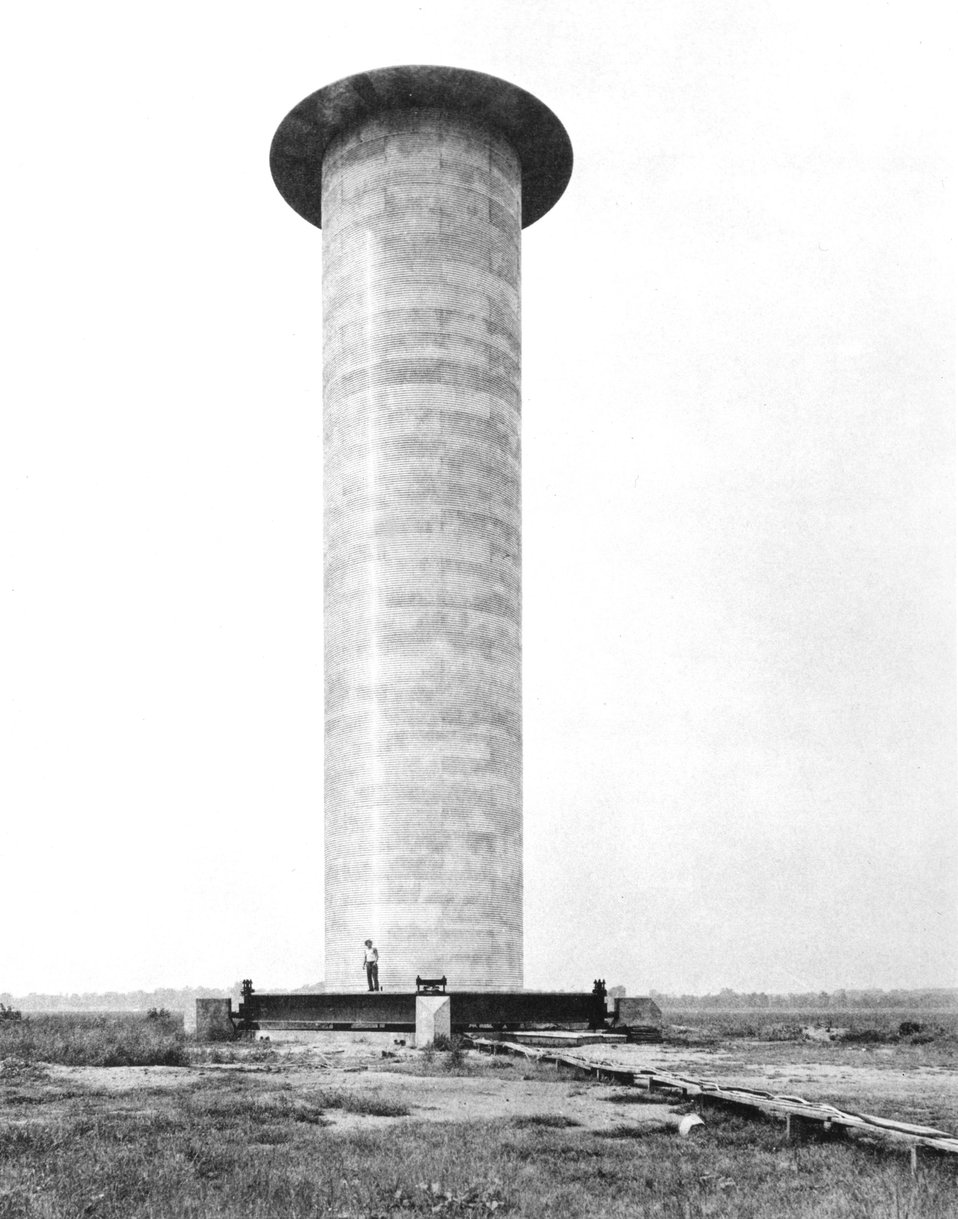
The Madaras concept for generating electricity from wind power is being re-investigated by the Energy Research and Development Administration. c. 1977